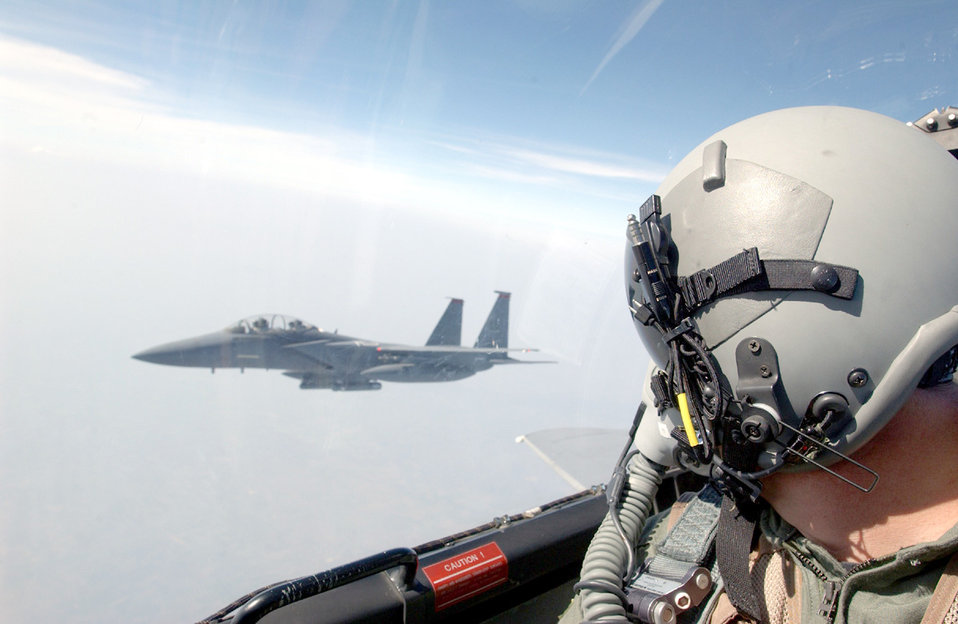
Cope Tiger '04

KORAT ROYAL AIR FORCE BASE, Thailand -- An F-15E Strike Eagle crewmember from the 90th Fighter Squadron at Elmendorf Air Force Base, Alaska, checks his wingman during a Cope Tiger '04 exercise mission. Strike Eagles are participating for the first time in the 10-year history of the exercise.